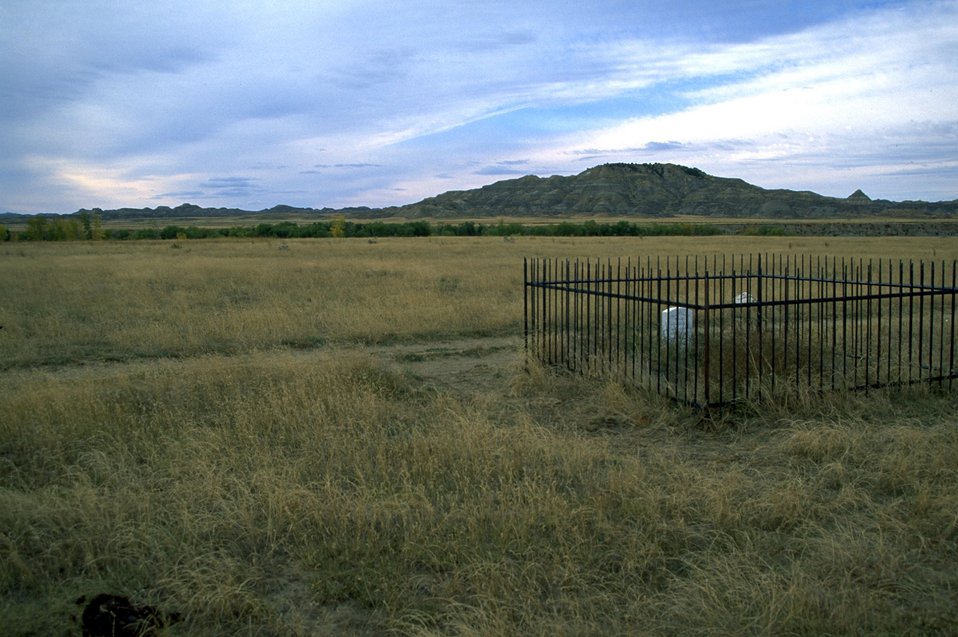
Gravesite at Power River Depot